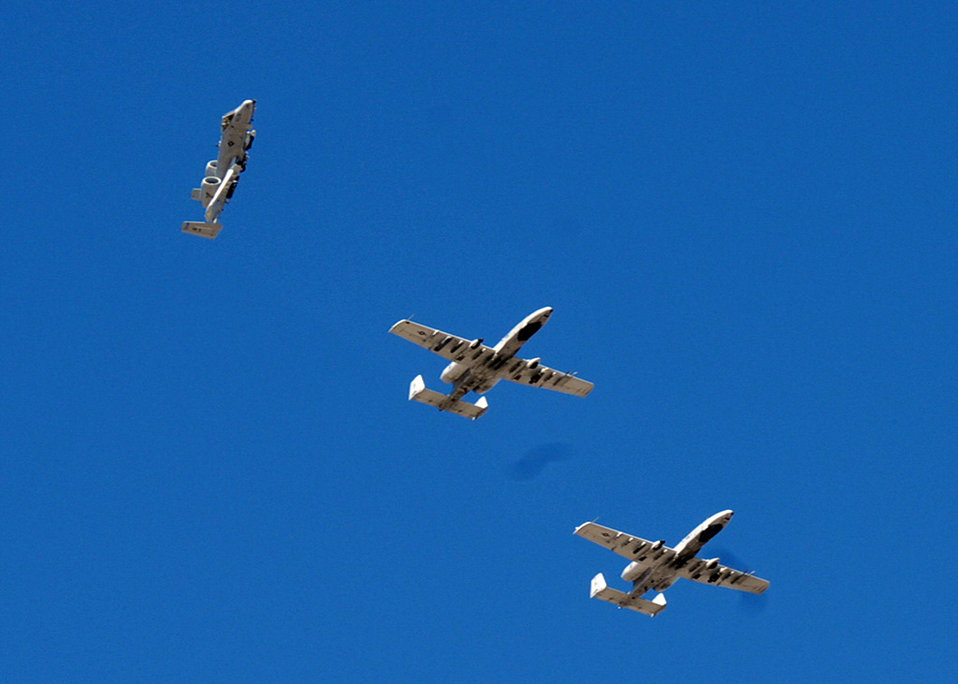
Hawgsmoke 2010

The first of three A-10 Thunderbolt IIs breaks formation before landing at Gowen Field in Boise, Idaho, for the 2010 Hawgsmoke competition. The competiton runs from Oct. 13 to 16.